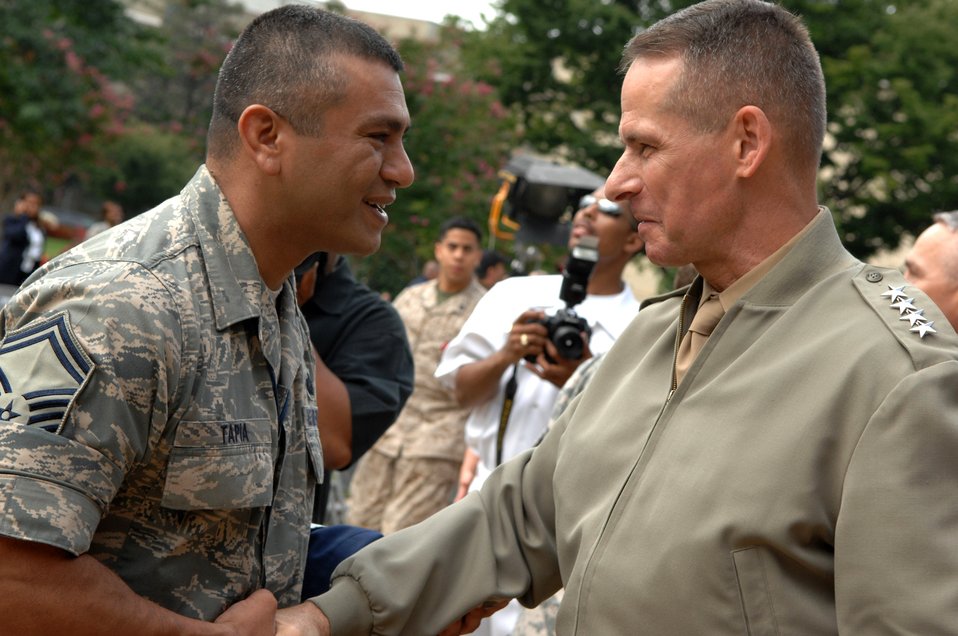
Chairman says farewell

Marine Gen. Peter Pace, chairman of the Joint Chiefs of Staff, thanks Senior Master Sgt. Gerardo Tapia Sept. 20 during a Farewell to the Troops ceremony at the Pentagon.